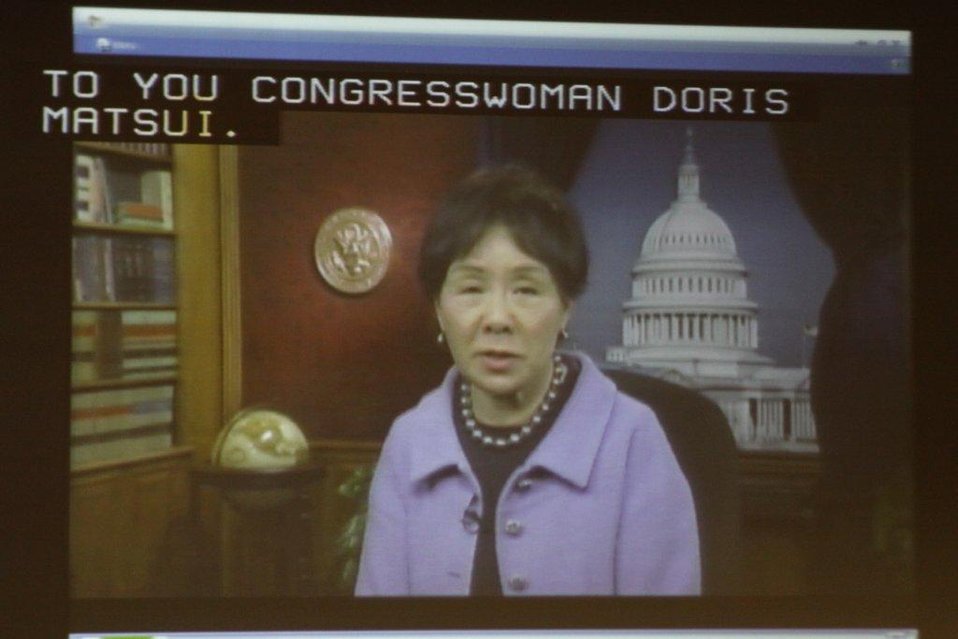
Congresswoman Doris Matsui (CA) via video recording